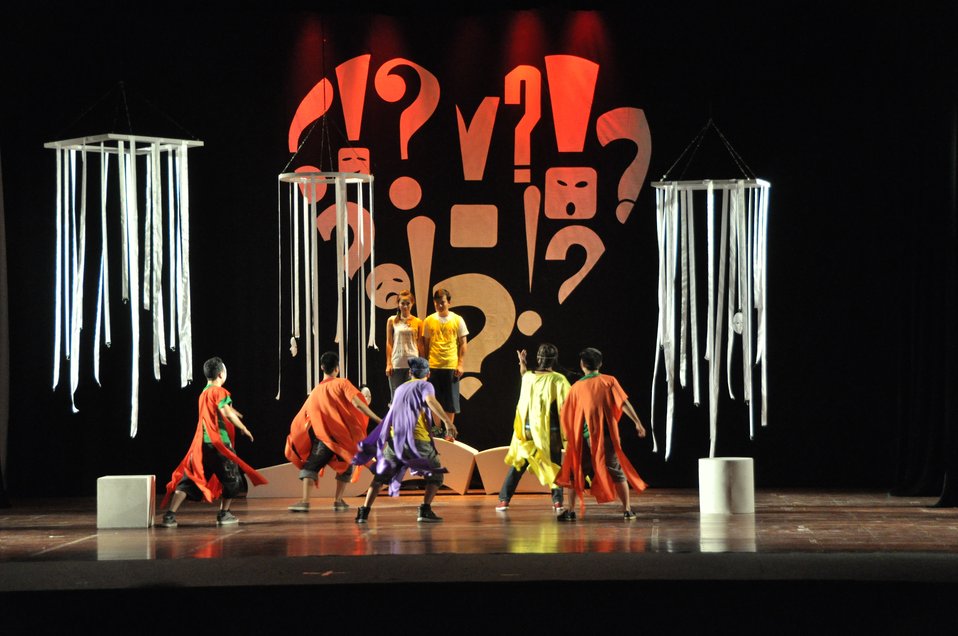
PEPFAR Musical Questions and Exclamations

Hanoi, May 17, 2013